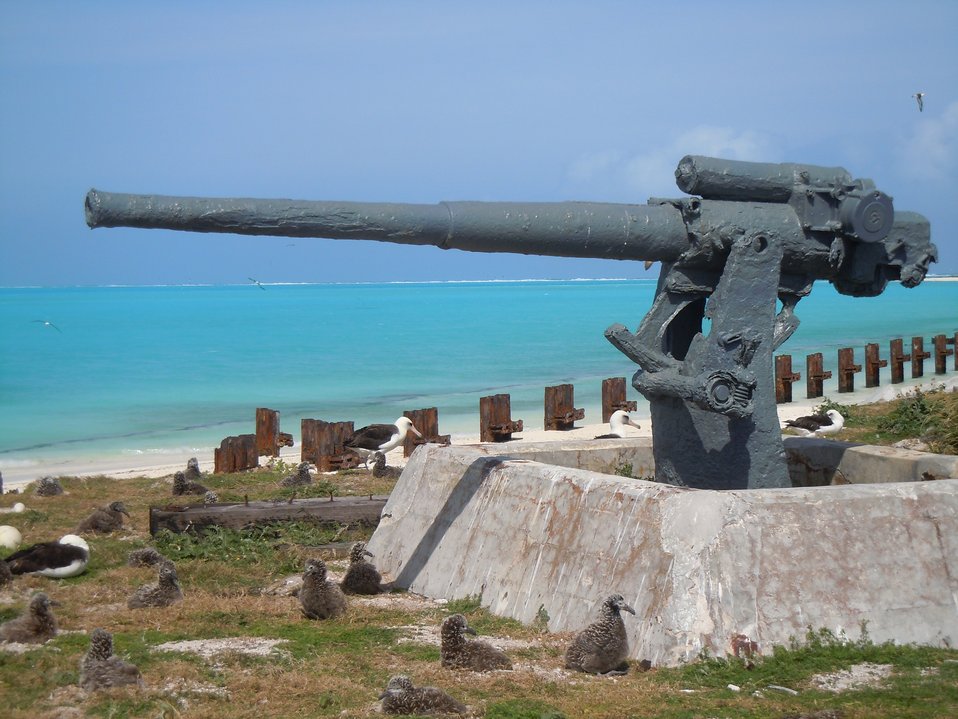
albatross nests & WW II gun emplacement

Midway Atoll National Wildlife Refuge
March 2012